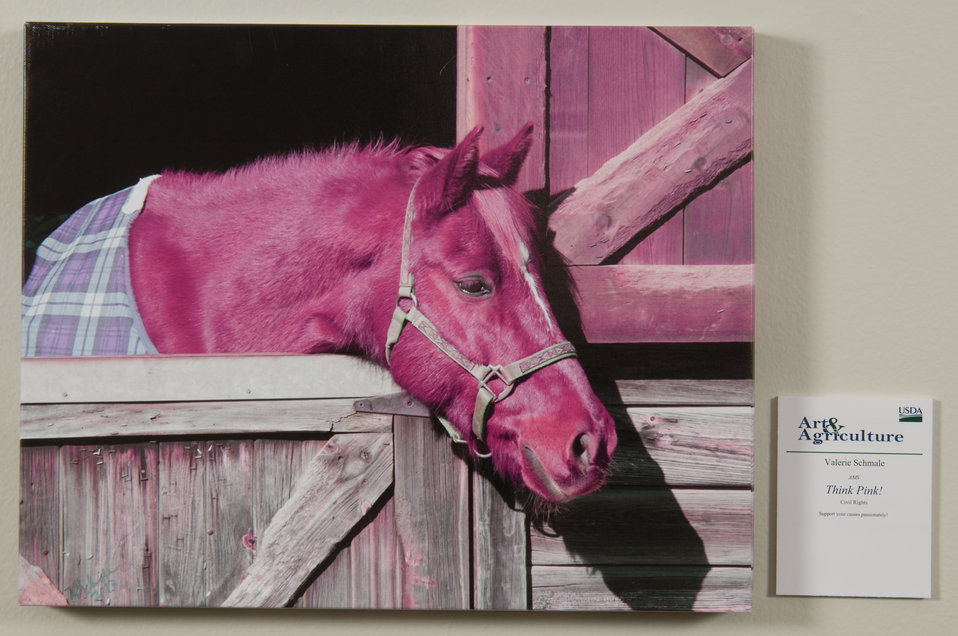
Online Viewer's Choice entries of the 2013 Art & Agriculture, Tuesday, July 9, 2013, in the South Building, Washington, D.C. Themes were expressed by employees from across the department and the contest was open to full-time and part-time USDA employees. Winning artwork will be displayed till the end of the year. U.S. Artistic expression is a creative outlet that is vital for an individual to grow and develop.